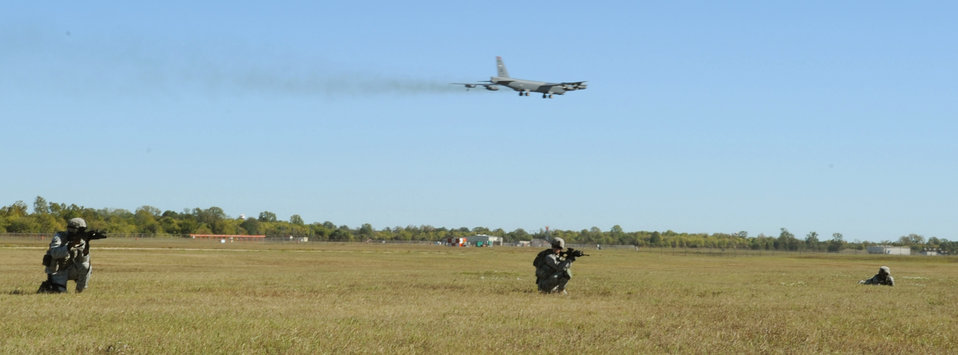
Barksdale Airmen prepare for Global Strike Challenge

Airmen from the 2nd Security Forces Squadron take aim on a target during a training exercise Nov. 4, 2010, at Barksdale Air Force Base, La. The Airmen are preparing for the four-day Global Strike Challenge competition.